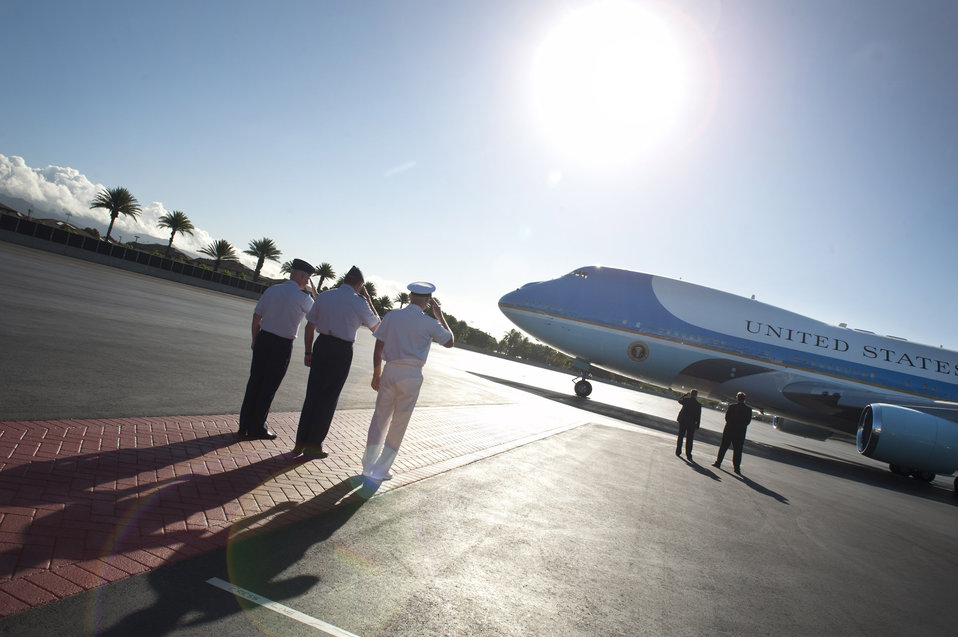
(Left to right) Col. Sam Barrett, Gen. Gary North and Navy Adm. Robert Willard salute as Air Force One taxis for departure Nov. 15, 2011, from Joint Base Pearl Harbor-Hickam. President Barack Obama was in Hawaii for the Asia Pacific Economic Corporation conferences. Barrett is the 15th Wing commander, North is the Pacific Air Forces commander and Willard is the commander of U.S. Pacific Command.